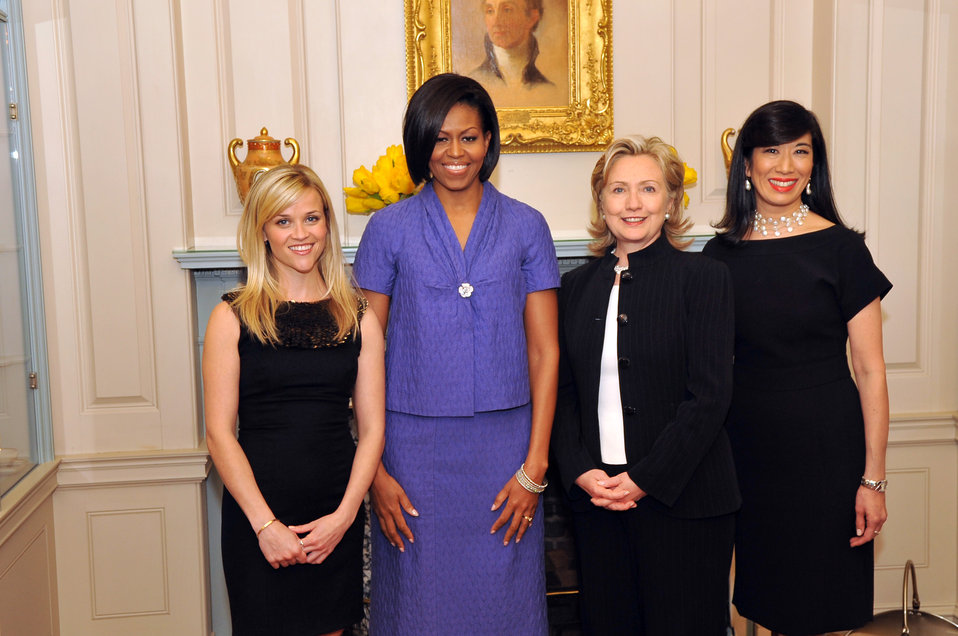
Secretary Clinton With Reese Witherspoon, First Lady Michelle Obama and Andrea Jung

U.S. Secretary of State Hillary Rodham Clinton stands with Avon's Global Ambassador Reese Witherspoon, First Lady Michelle Obama, and Avon's Chairwoman and CEO Andrea Jung at the 2010 International Women of Courage Awards at the U.S. Department of State, Washington, D.C. March 10, 2010.